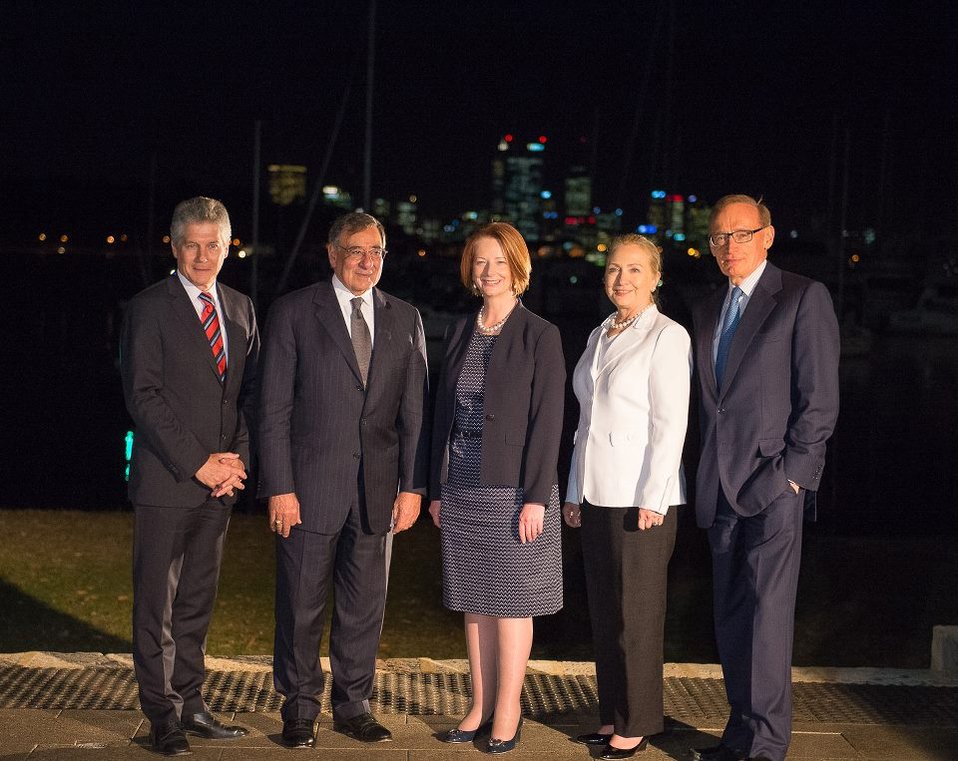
Australian Foreign Minister Smith, Secretary Panetta, Australian Prime Minister Gillard, Secretary Clinton, and Australian Foreign Minister Carr Pose for a Photo

From left to right, Australian Defense Minister Stephen Smith, U.S. Secretary of Defense Leon Panetta, Australian Prime Minister Julia Gillard, U.S. Secretary of State Hillary Rodham Clinton, and Australian Foreign Minister Robert Carr pose for a photo after their meeting in Perth, Australia, November 13, 2012. [U.S. Embassy in Canberra, Australia photo by Travis Longmore/ Public Domain]